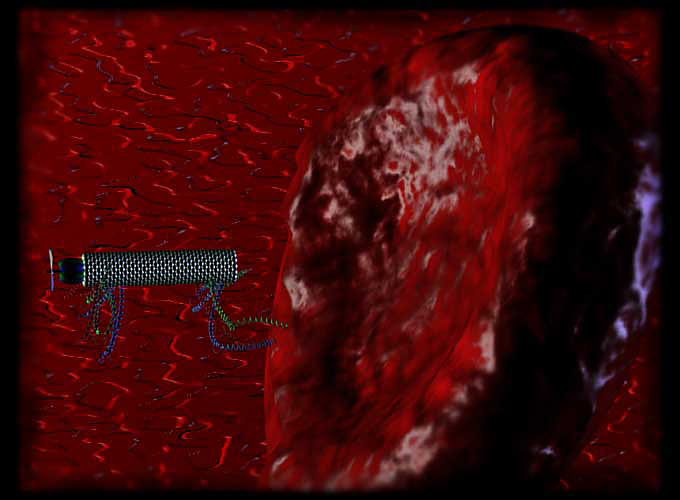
Microbots; Nanosoccer

Artist rendition of a tiny robot approaching a malfunctioning red blood cell in order to destroy it. NIST-organized soccer competitions for microbots provide a venue for testing agility, maneuverability, response to computer control and the ability to move objects - all skills that future miniaturized 'surgeons' will need.